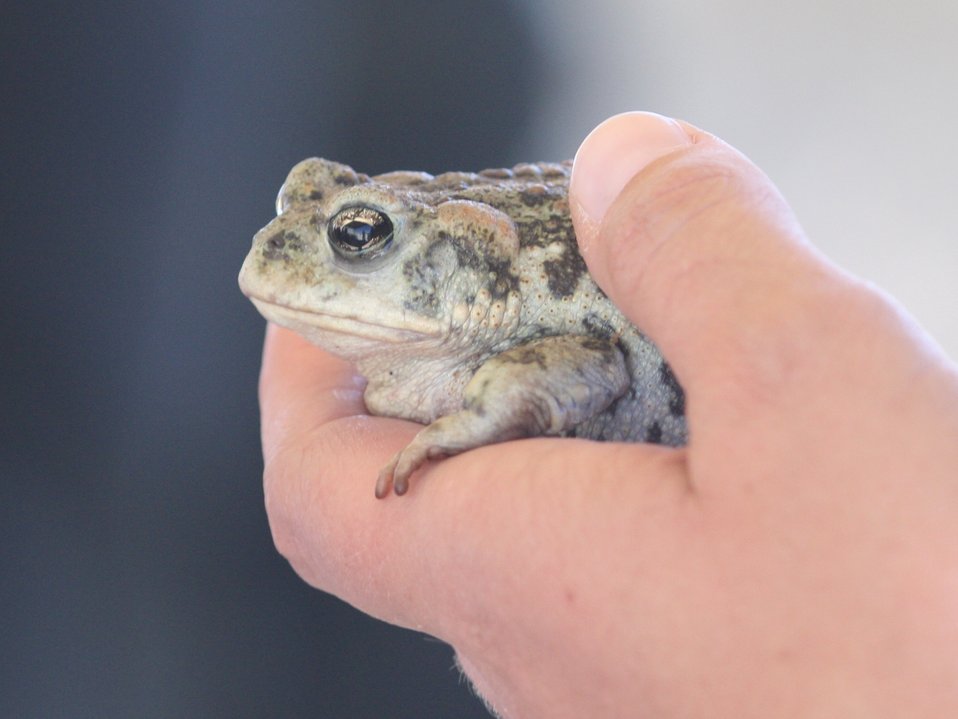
Western toad

This toad is very common at Ash Meadows National Wildlife Refuge. Kids learned what makes it different from reptiles. Paul van Els/USFWS